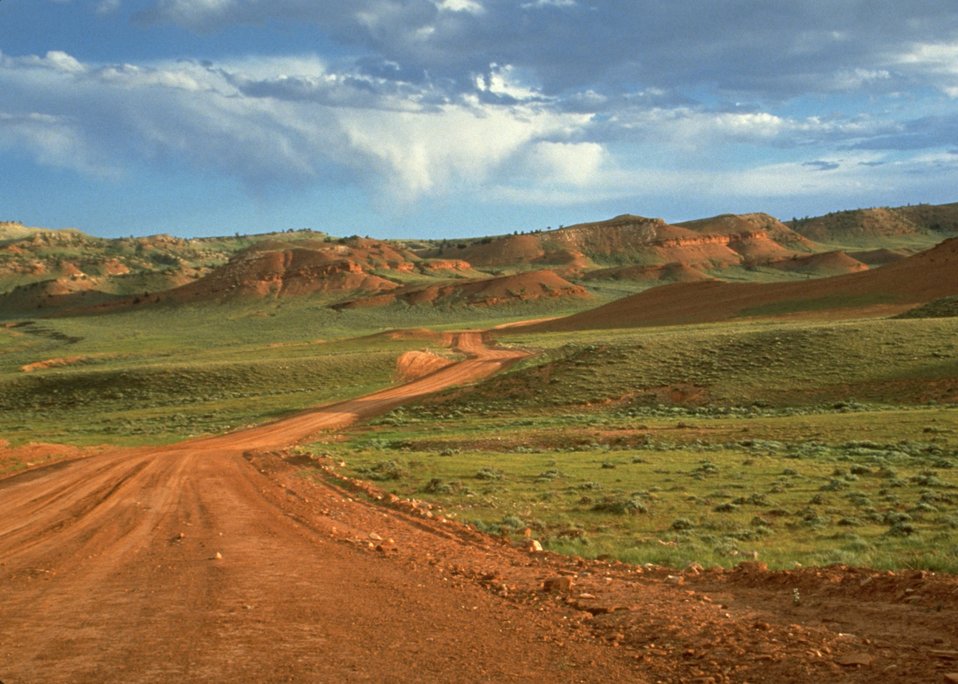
Scenic view of Red Canyon.